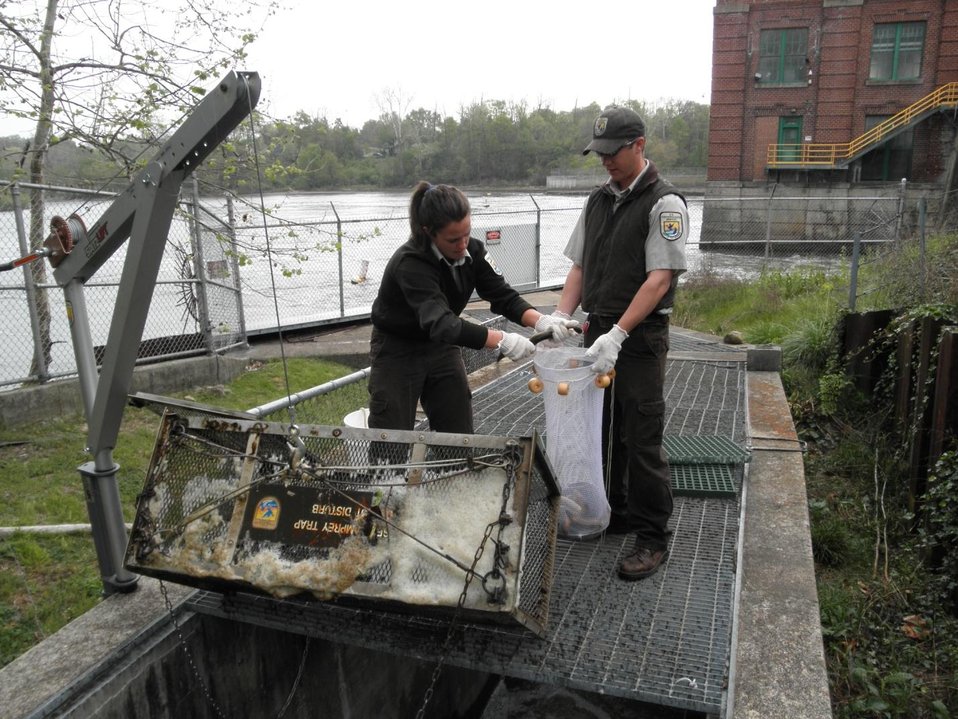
Service Employees at St. Joe River, Michigan checking Sea Lamprey Traps.